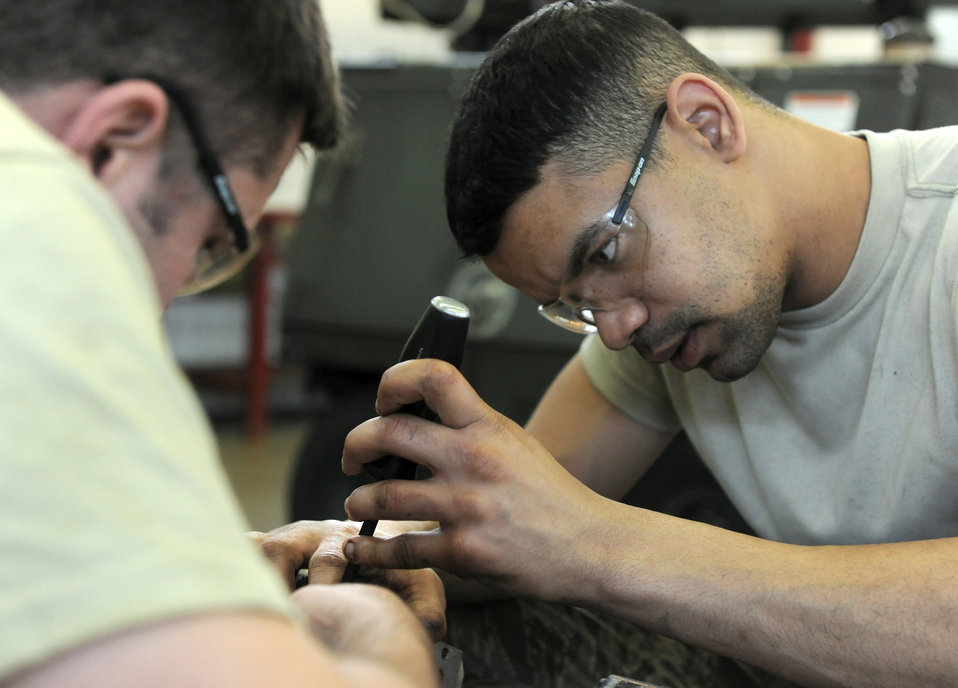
Working on a bomb lift

Airman 1st Class Gary Hutchison (right) and Senior Airman Blake Skaggs unscrew bolts holding a directional control valve together on a bomb lift April 7, 2011, at Spangdahlem Air Base, Germany. Both Airmen are assigned to the 52nd Equipment Maintenance Squadron as aerospace ground equipment journeymen.